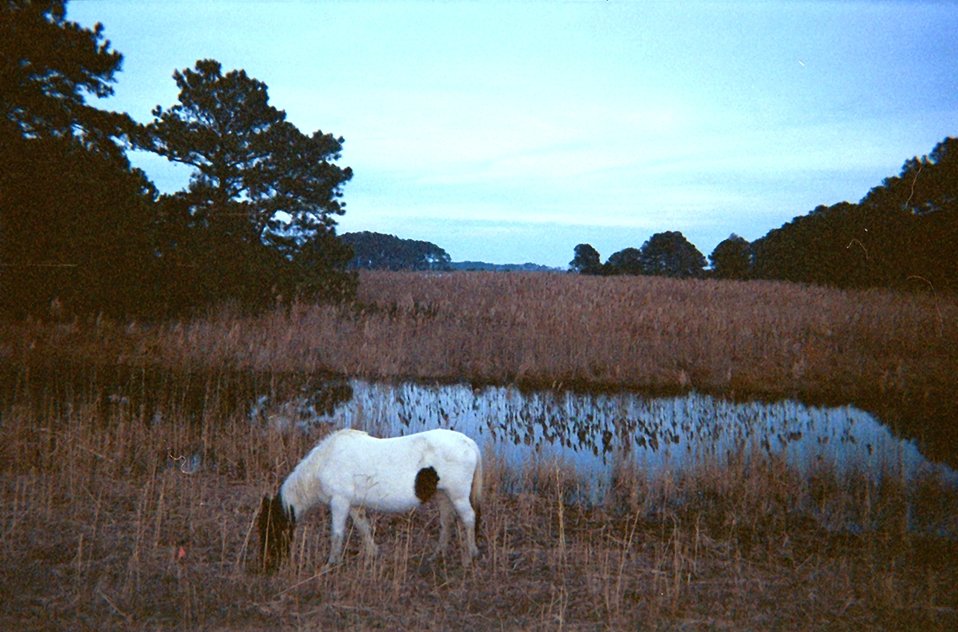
A budding Misty of Chincoteague grazes on Assateague Island.